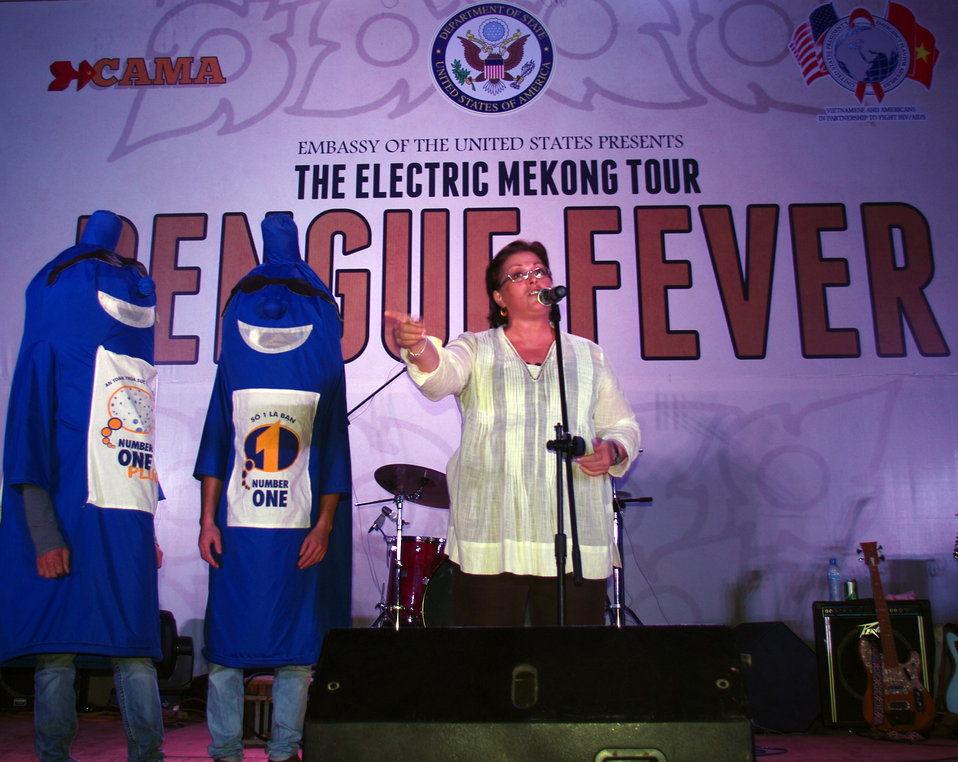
PEPFAR, U.S. Embassy Host Dengue Fever Concert in Hanoi

U.S. Embassy Deputy Chief of Mission Claire Pierangelo introduces the Dengue Fever band.